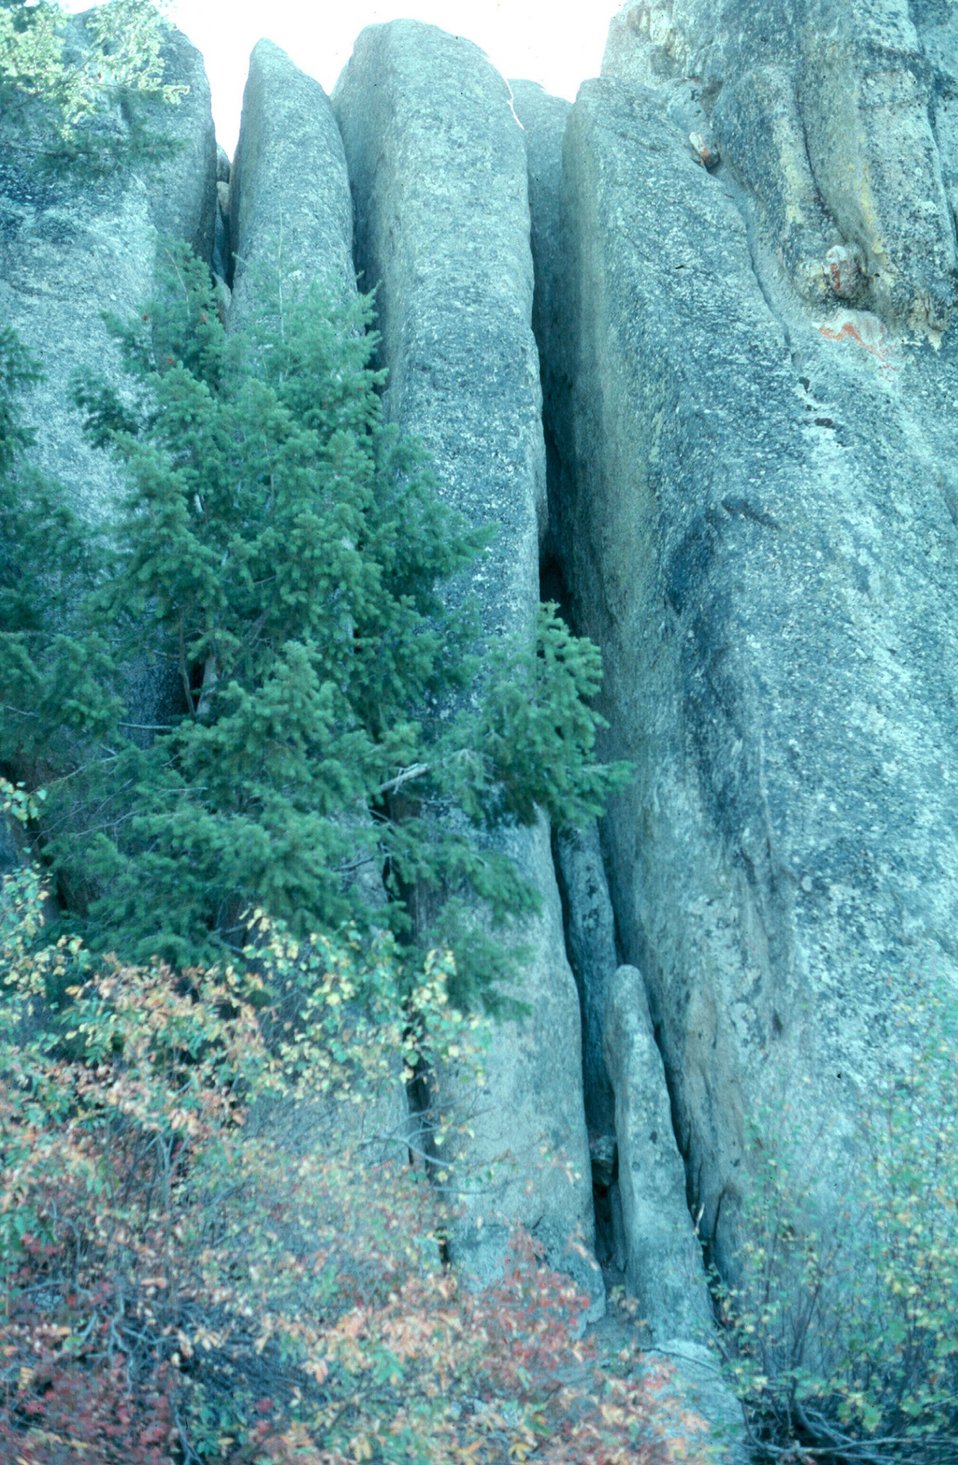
Silent City large vertical fractions Burley Field Office USRD Upper Snake River District